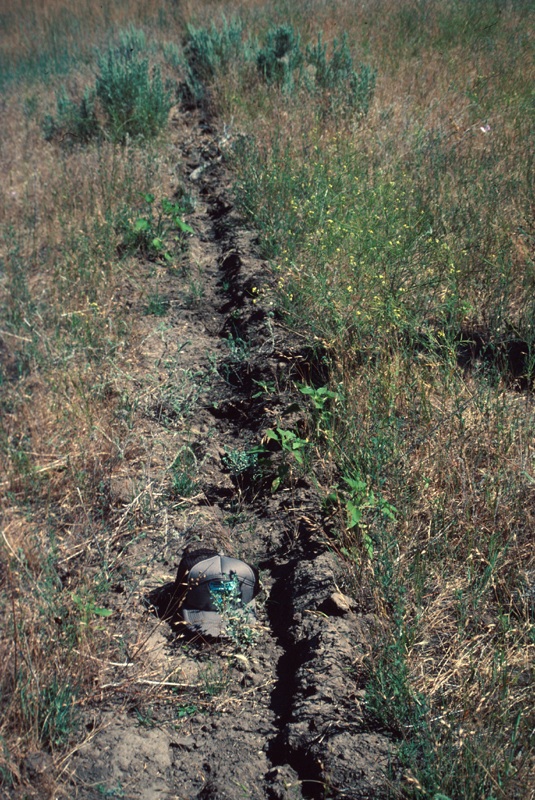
Tree Planter Square Butte Range Restoration Project Lower Snake River District